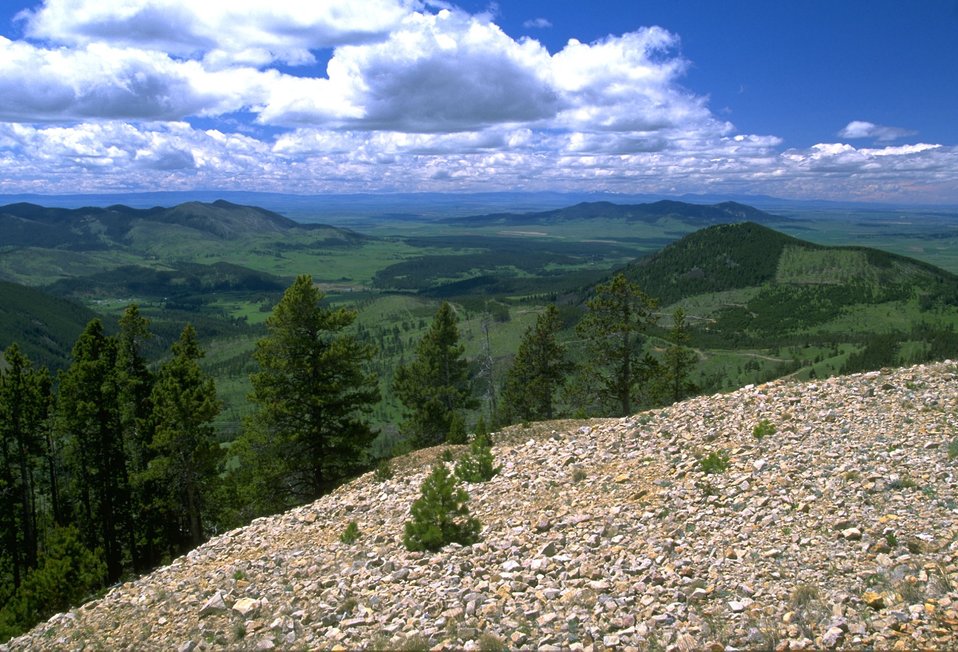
Clouds over a valley in the Judith Mountains